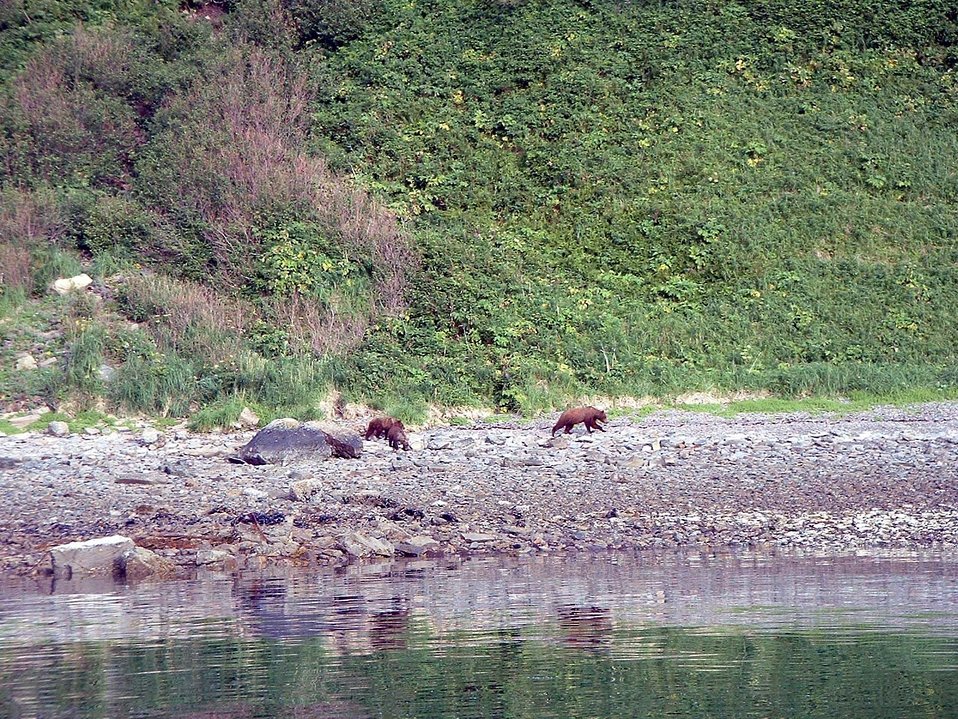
Mama bear with two cubs - Alaska brown bears - Ursus arctos.